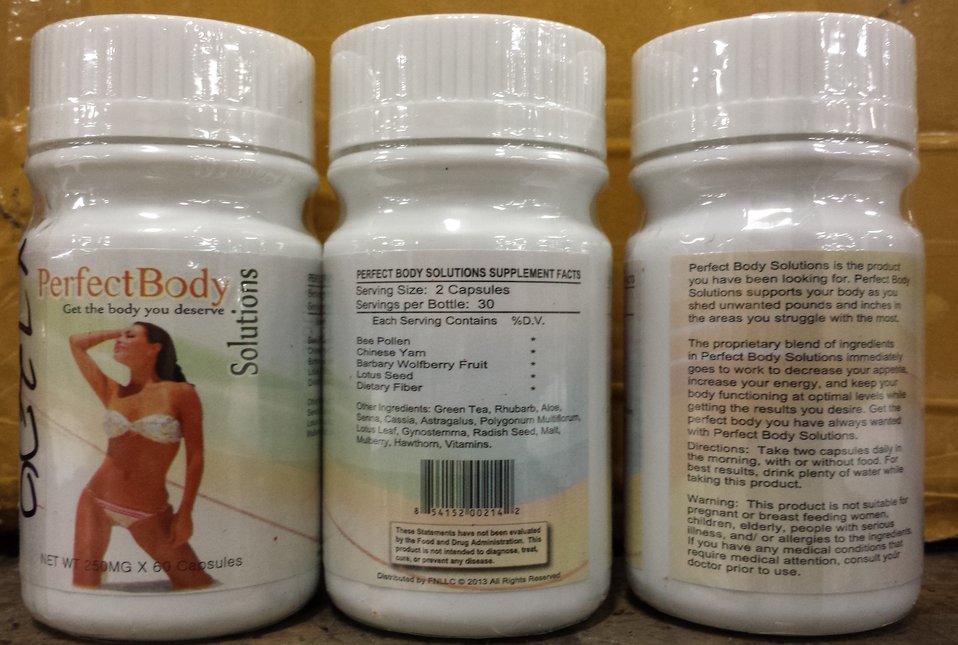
Perfect Body Solutions

October 10, 2013 - The FDA is advising consumers not to purchase or use 'Perfect Body Solutions,' a product promoted and sold for weight loss. The product was found to contain undeclared sibutramine. For more information, go to www.fda.gov/drugs/resourcesforyou/consumers/buyingusingme...

And read this Consumer Update: Beware of Fraudulent ‘Dietary Supplements’